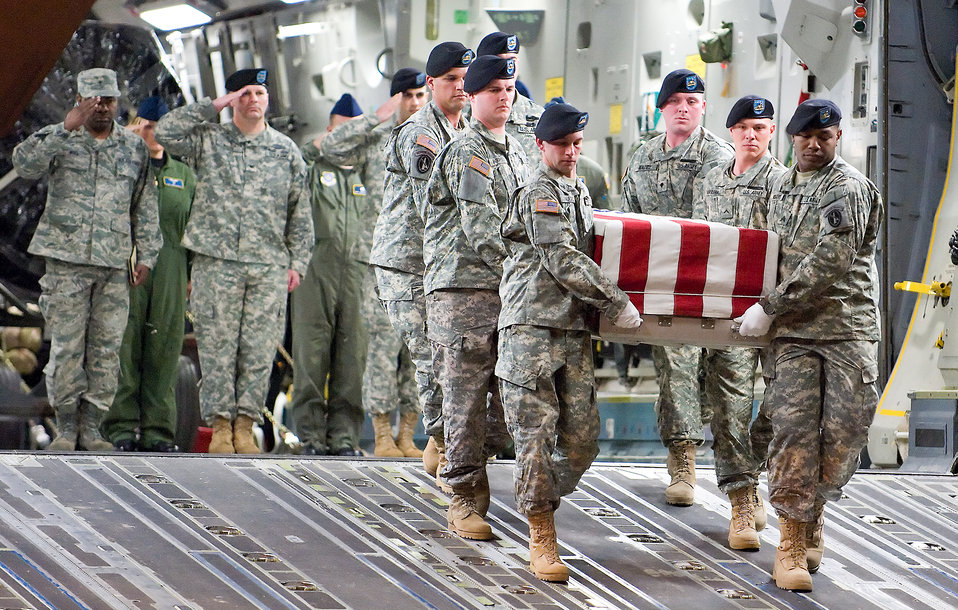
Charleston Airmen fly honorable mission

An Army carry team transfers the remains of Army Spc. Israel Candelaria Mejias off from a C-17 Globemaster III April 7 at Dover Air Force Base, Del. Specialist Candelaria Mejias of San Lorenzo, Puerto Rico, died April 5 of wounds sustained when a mine detonated near him during combat operations near Baghdad, Iraq. He was assigned to the 1st Battalion, 2nd Infantry Regiment in Task Force 3rd Battalion, 66th Armor Regiment, 172nd Brigade Combat Team from Grafenwoehr, Germany. The C-17 is assigned to Charleston AFB, S.C.